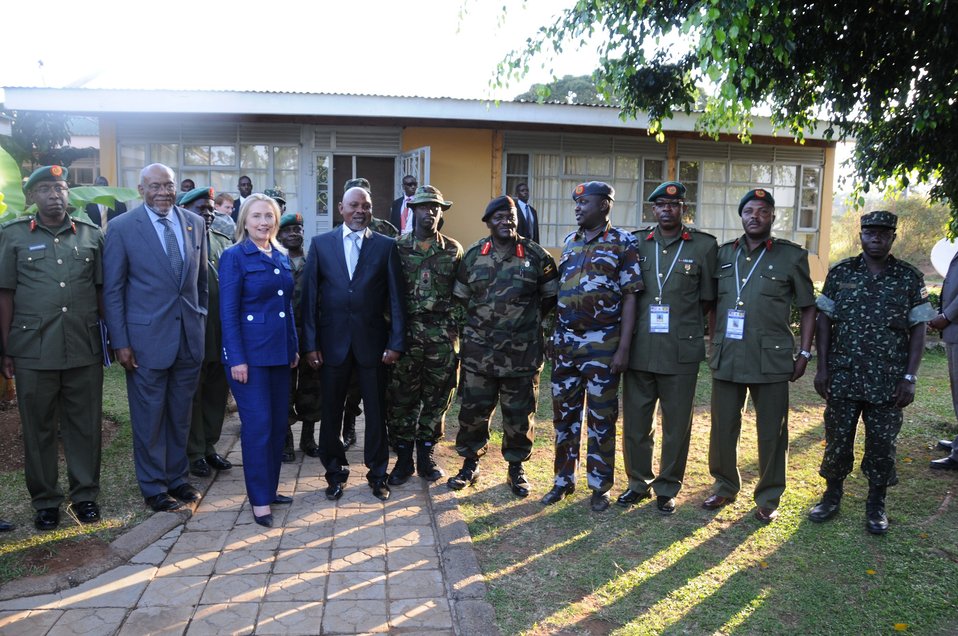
Secretary Clinton Poses at UPDF's Kasenyi Military Base

U.S. Secretary of State Hillary Rodham Clinton poses for a photograph with the U.S. Assistant Secretary of State for African Affairs Johnnie Carson and members of the Uganda People’s Defense Force (UPDF), at the UPDF's Kasenyi military base in Kampala, Uganda on August 3, 2012.